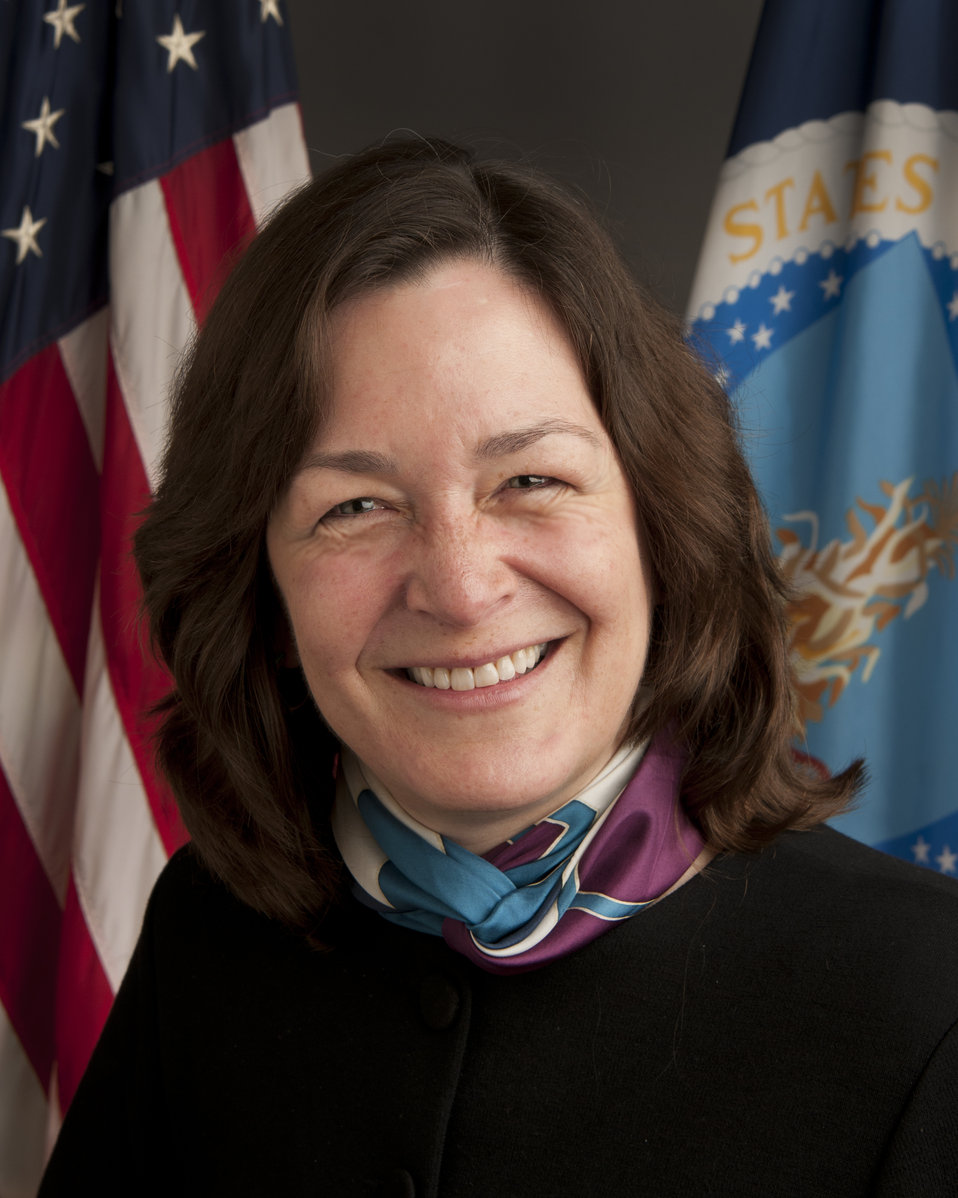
20130507-OSEC-KJH-0060 Director Tribal Relations Leslie Wheelock

U.S. Department of Agriculture (USDA) Director of Tribal Relations Leslie Wheelock.